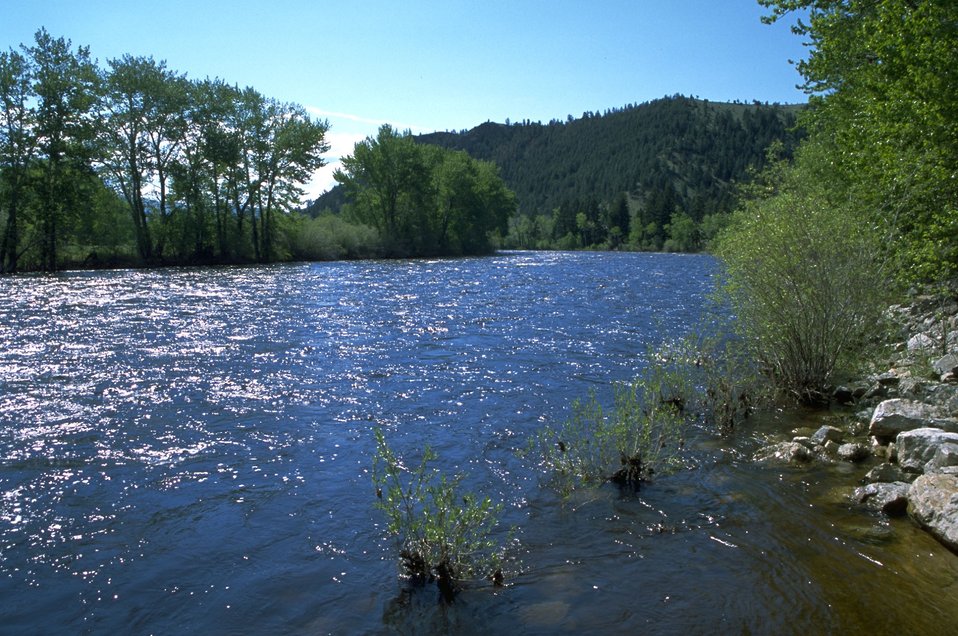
Sun shining on the Big Hole River which is surrounded by mountains and trees